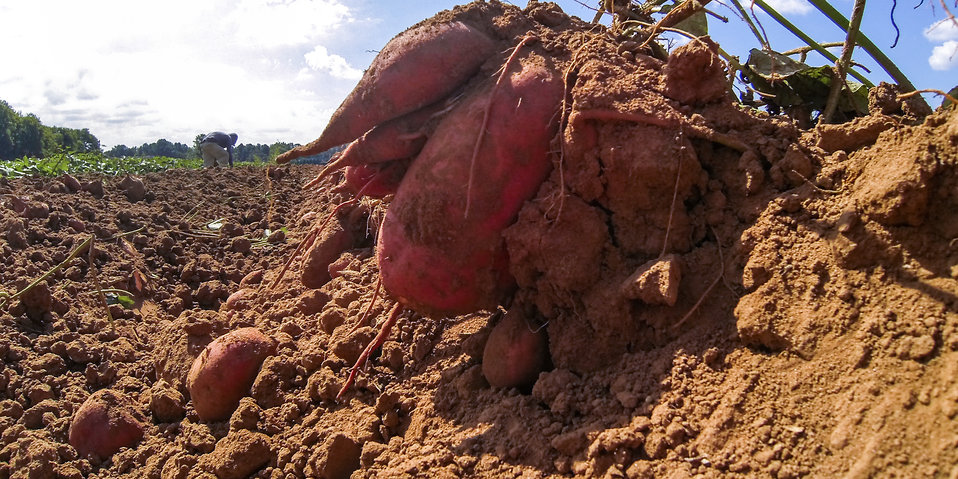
Migrant workers pick, separate, and process sweet potatoes at Kirby Farms in Mechanicsville, VA on Friday, Sept. 20, 2013. 200 acres of the farm are devoted to eggplant, spinach, beets, tomato, jalapeno peppers, melons and a variety of greens. Soybeans and small grain are grown on the remaining 300 acres. Using rotational crop practices allows Kirby Farms to double and triple crop yields. Wholesalers, who buy from this farm, sell the produce to major supermarkets in the Mid-Atlantic region, from North Carolina to Maryland. Restaurants in the local area prepare and serve the local bought produce to patrons in the Richmond, VA metropolitan area.